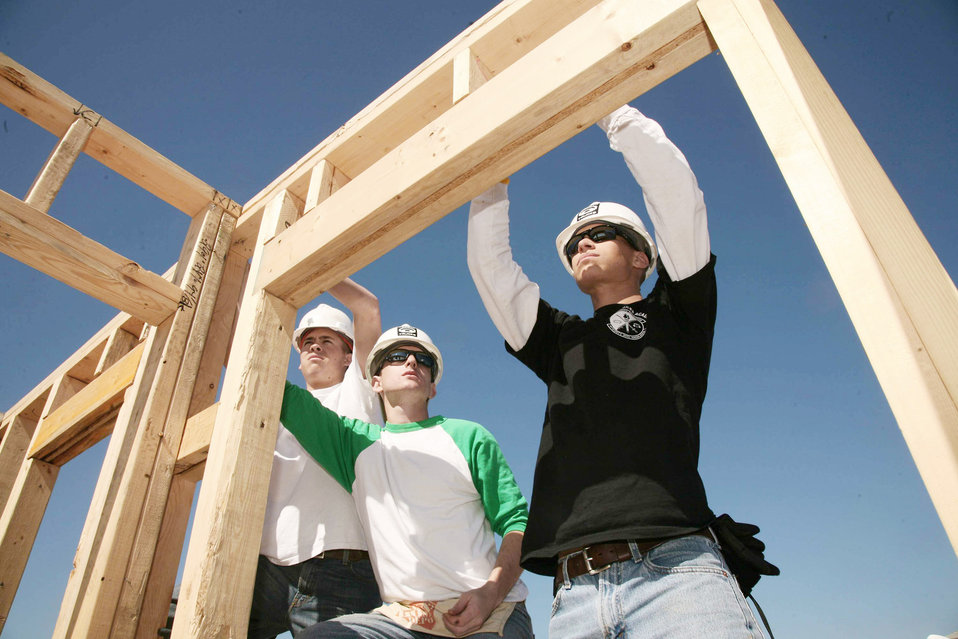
SHIELD Program

(Left to right) Airmen Greg Graham, Brett Huette and Branden Hartlove, security forces trainees with the 343rd Training Squadron at Lackland Air Force Base, Texas, take measurements while framing a Habitat for Humanity house Feb. 6, 2010. The Airmen are taking part in the 343rd TRS SHIELD -- Service, Honor, Integrity, Excellence and Leadership Development -- program, which emphasizes character building.